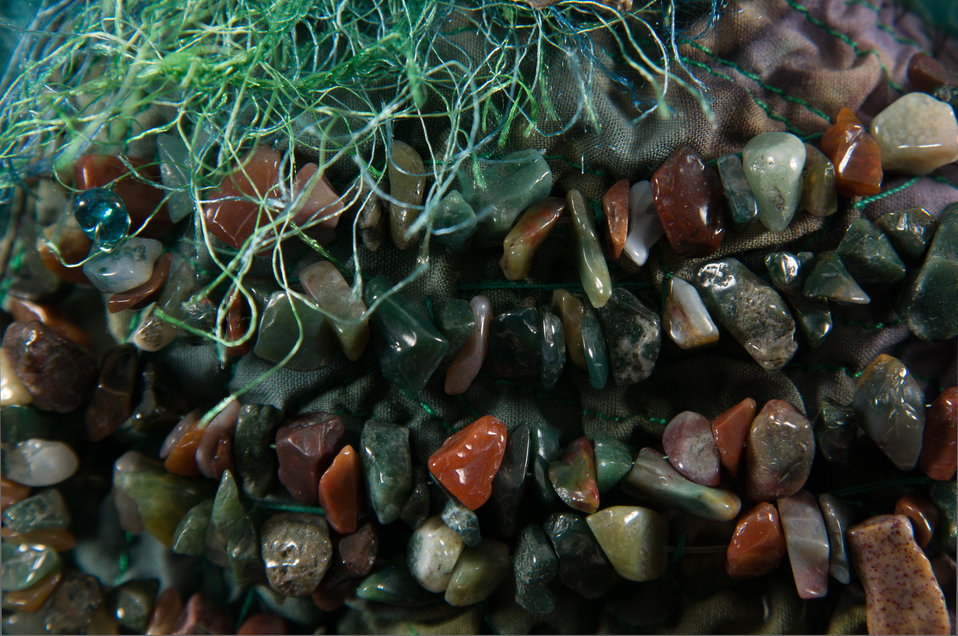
Online Viewer's Choice entries of the 2013 Art & Agriculture, Tuesday, July 9, 2013, in the South Building, Washington, D.C. Themes were expressed by employees from across the department and the contest was open to full-time and part-time USDA employees. Winning artwork will be displayed till the end of the year. U.S. Artistic expression is a creative outlet that is vital for an individual to grow and develop.